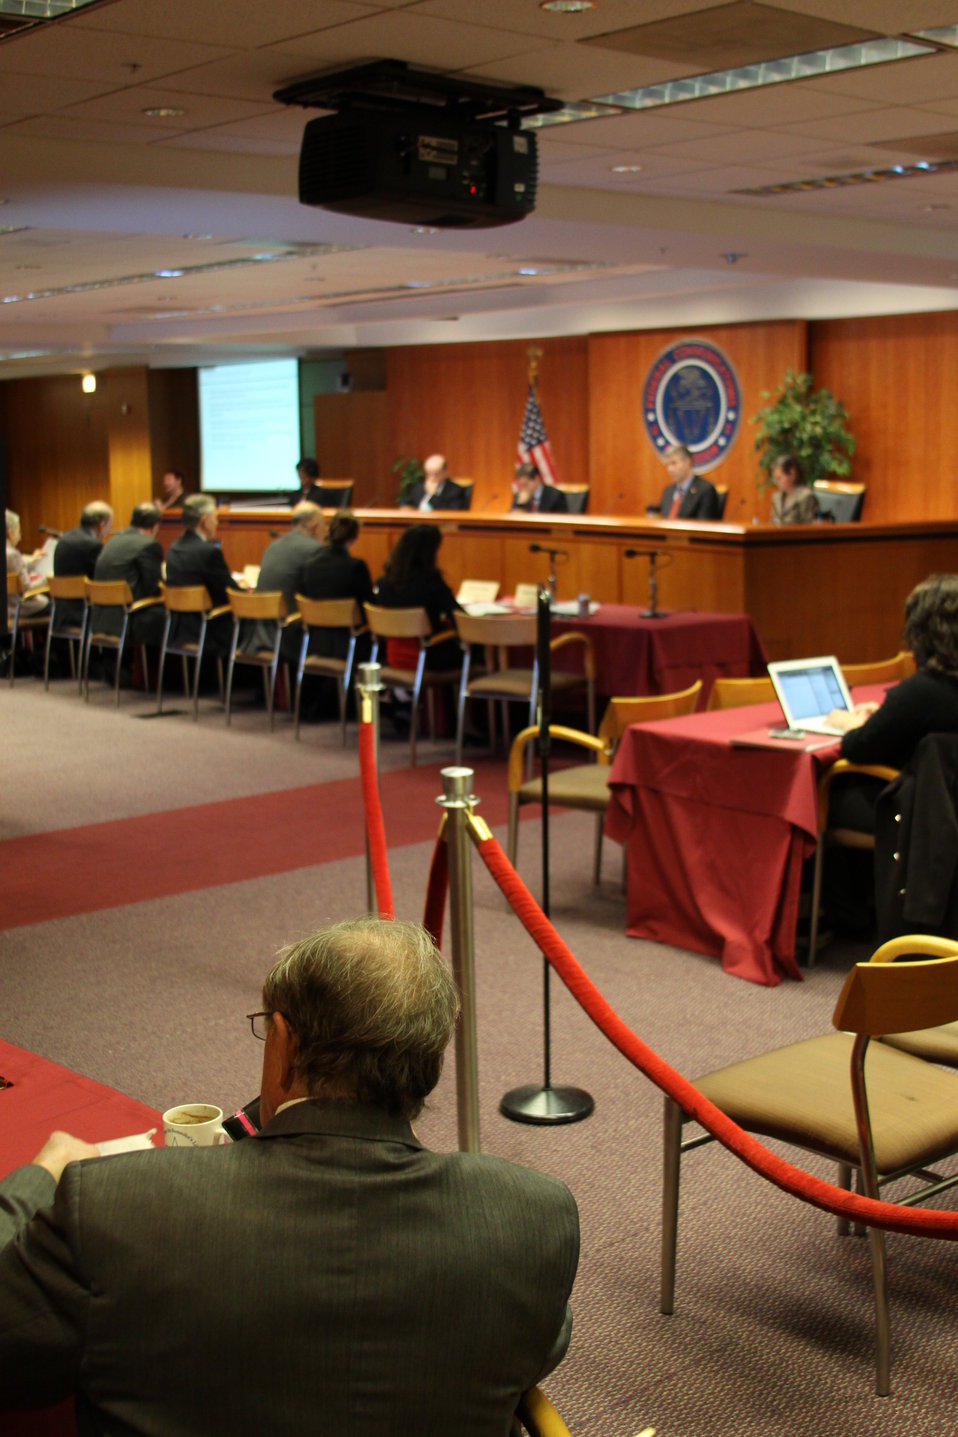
December Commission Meeting